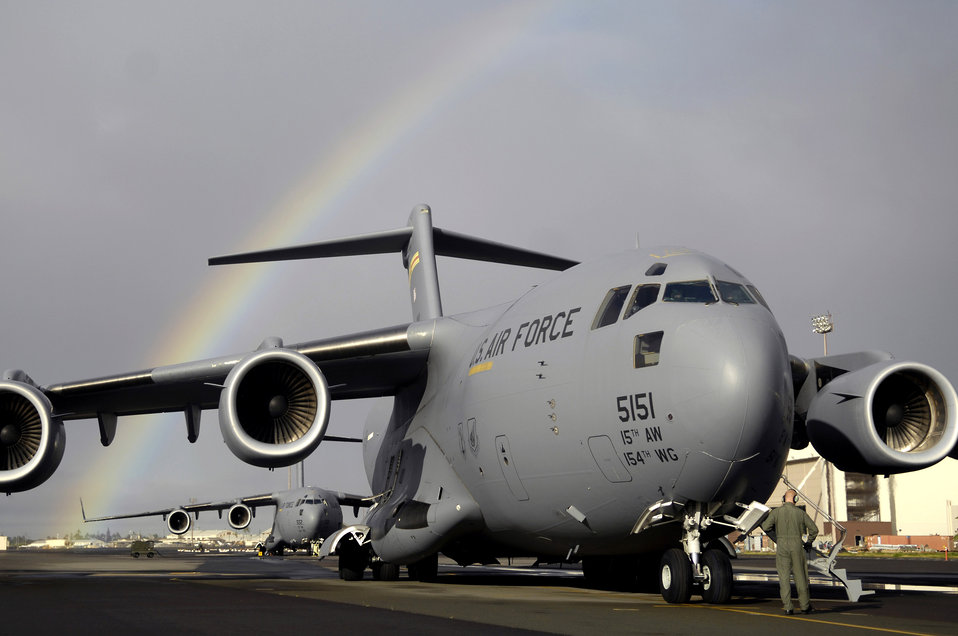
It's going to be a good flight

Staff Sgt. John Eller conducts pre-flights check on his C-17 Globemaster III Jan. 3 prior to taking off from Hickam Air Force Base, Hawaii for a local area training mission. Sgt. Eller is a loadmaster from the 535th Airlift Squadron.